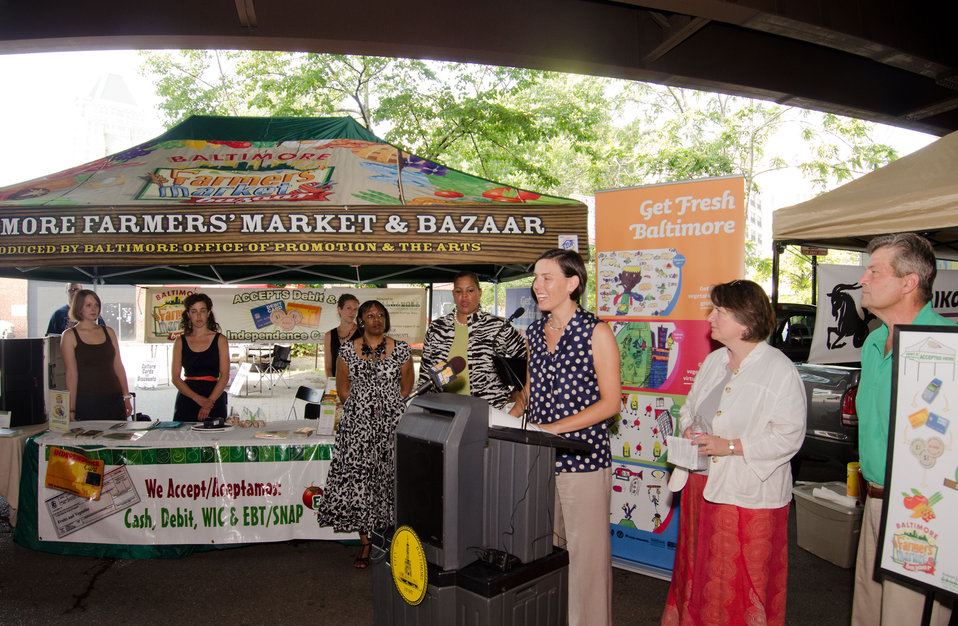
Baltimore Food Policy Director Holly Freishtat (at podium) and Agriculture Deputy Secretary Kathleen Merrigan (right) help launch Baltimore’s Farmers Market and Bazaar use of the U.S. Department of Agriculture’s (USDA) Food Nutrition Service’s (FNS) Supplemental Nutrition Assistance Program (SNAP) Electronic Benefits Transfer (EBT) cards, Baltimore Bucks, and debit card utilizing a wireless connection in Baltimore, MD on Sunday, July 8, 2012. The U.S. Department of Agriculture, Kaiser Permanente of the Mid-Atlantic States, Abell Foundation, the Harry and Jeanette Weinberg Foundation, the Baltimore Community Foundation, Maryland Hunger Solutions, the Maryland Department of Agriculture Baltimore Office of Promotions and the Arts, and Department of Social Services are participating partners in the farmers market.